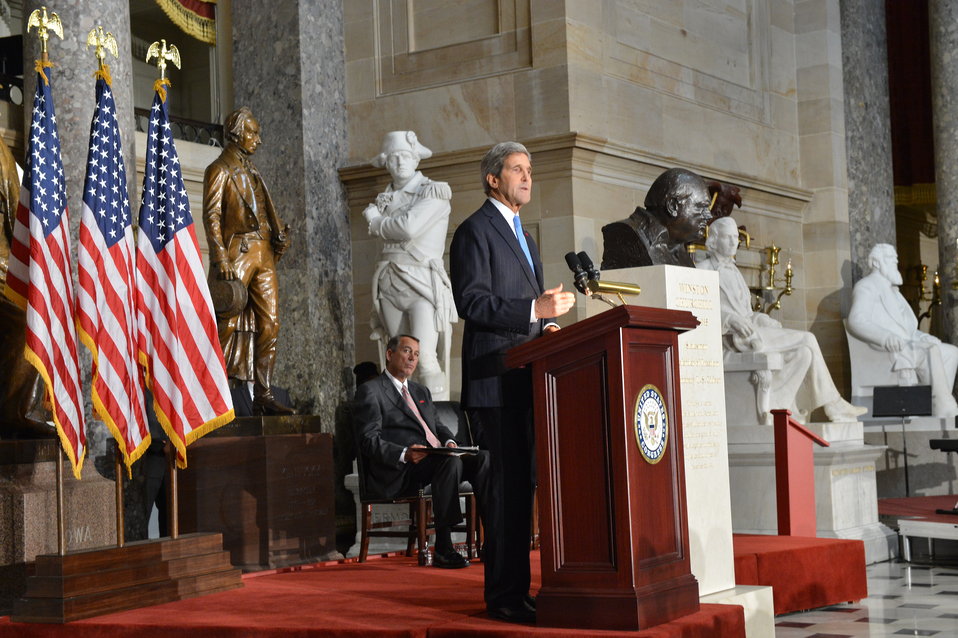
Secretary Kerry Delivers Remarks at the Dedication of a Bust of Winston Churchill

U.S. Secretary of State John Kerry delivers remarks at the dedication of a bust of Winston Churchill at the U.S. Capitol in Washington, D.C., on October 30, 2013. The bust is being placed pursuant to H. Res. 497, which was authored by House Speaker John Boehner and passed the House shortly before the 70th anniversary of Churchill's wartime address to a joint meeting of Congress.